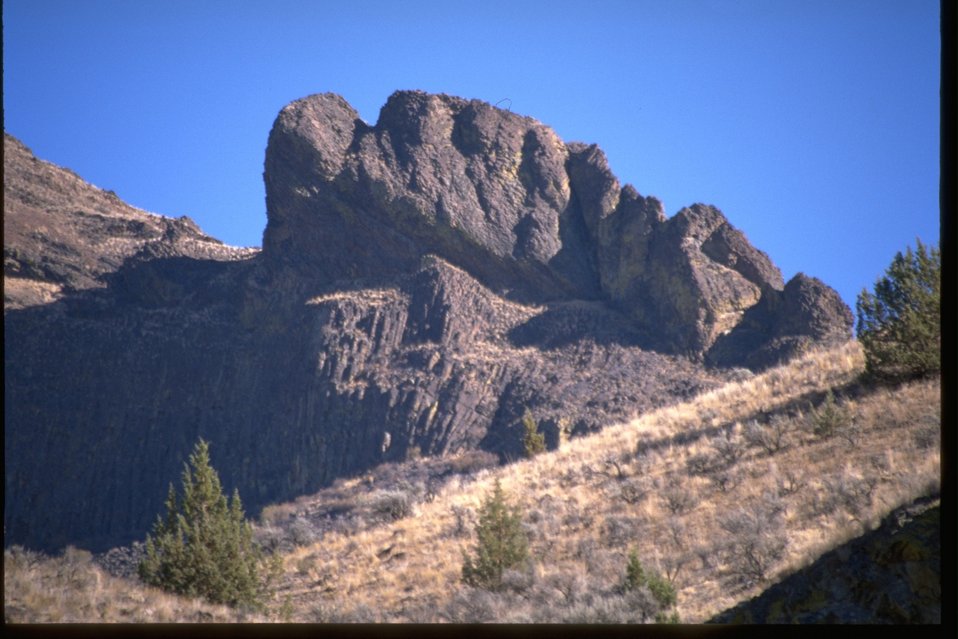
Sleeping Indian peak above the John Day River.